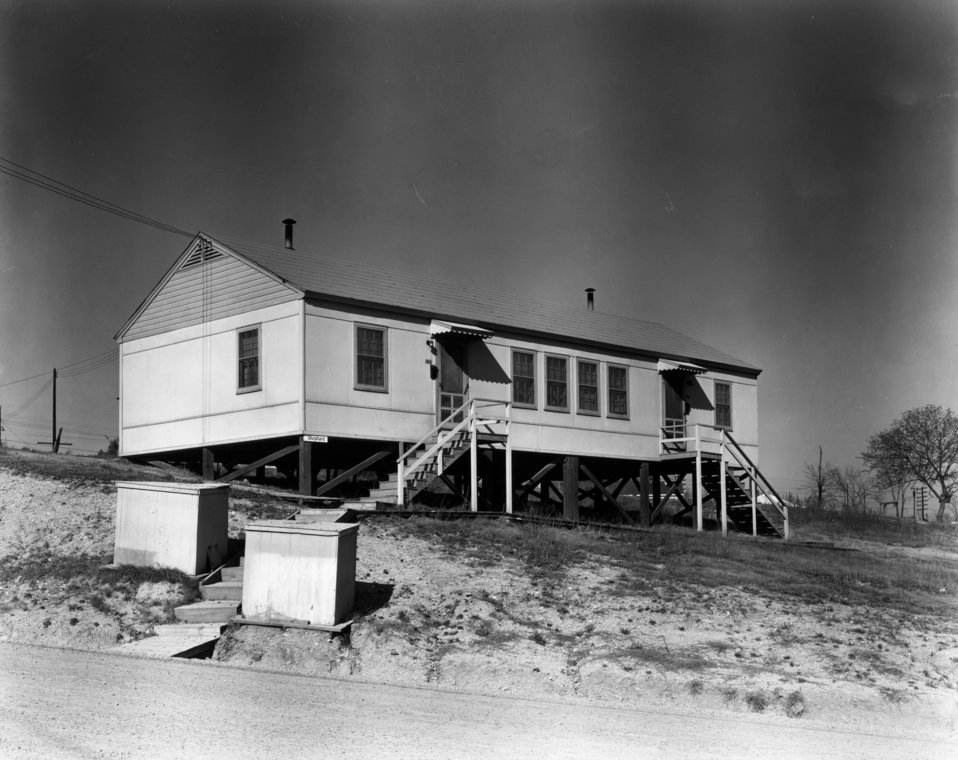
Housing at Oak Ridge